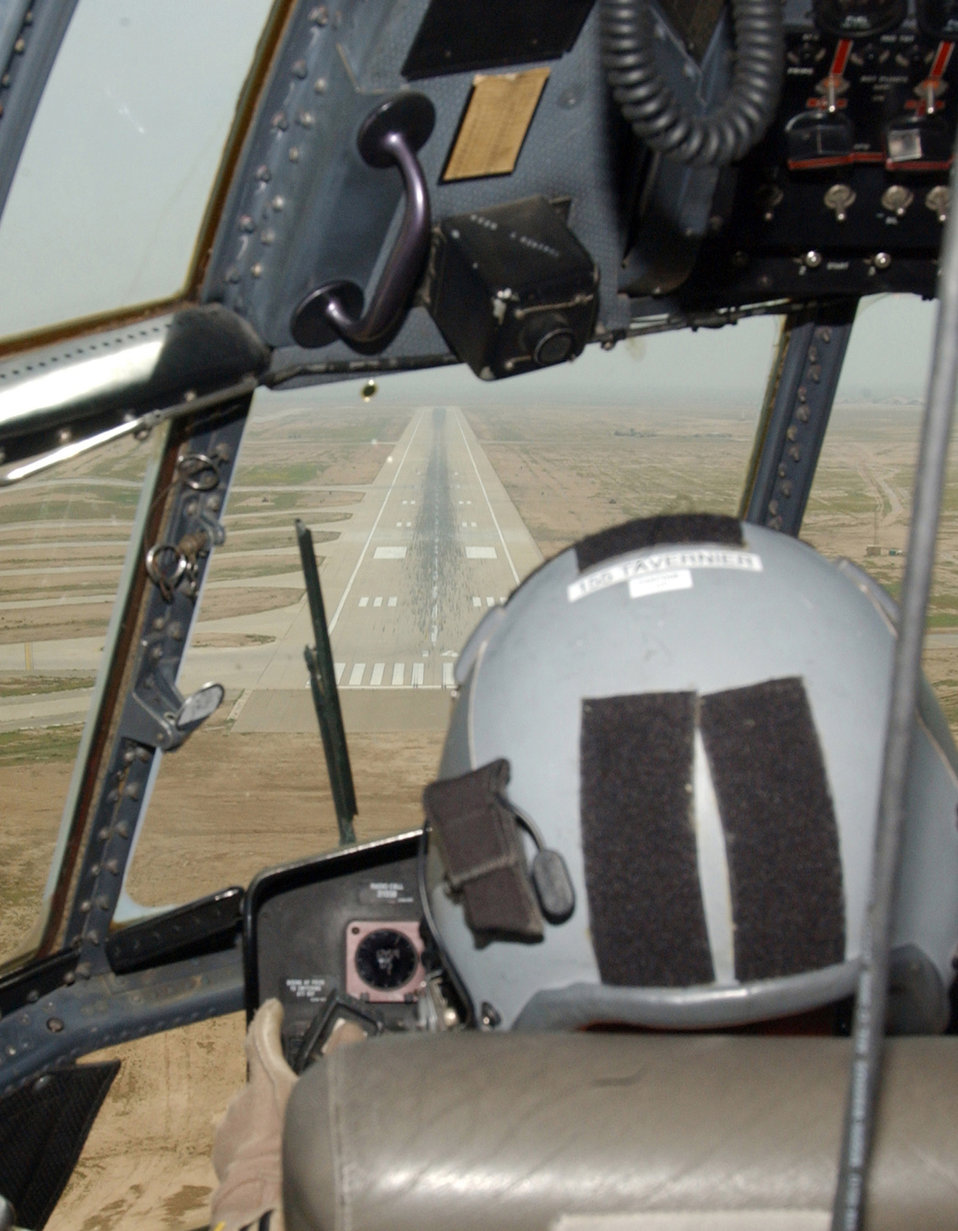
C-130s keep convoys out of Sunni Triangle

Capt. Brian Tavernier lines up his C-130 Hercules for a landing at Balad Air Base, Iraq. The captain is with the 777th Expeditionary Airlift Squadron.